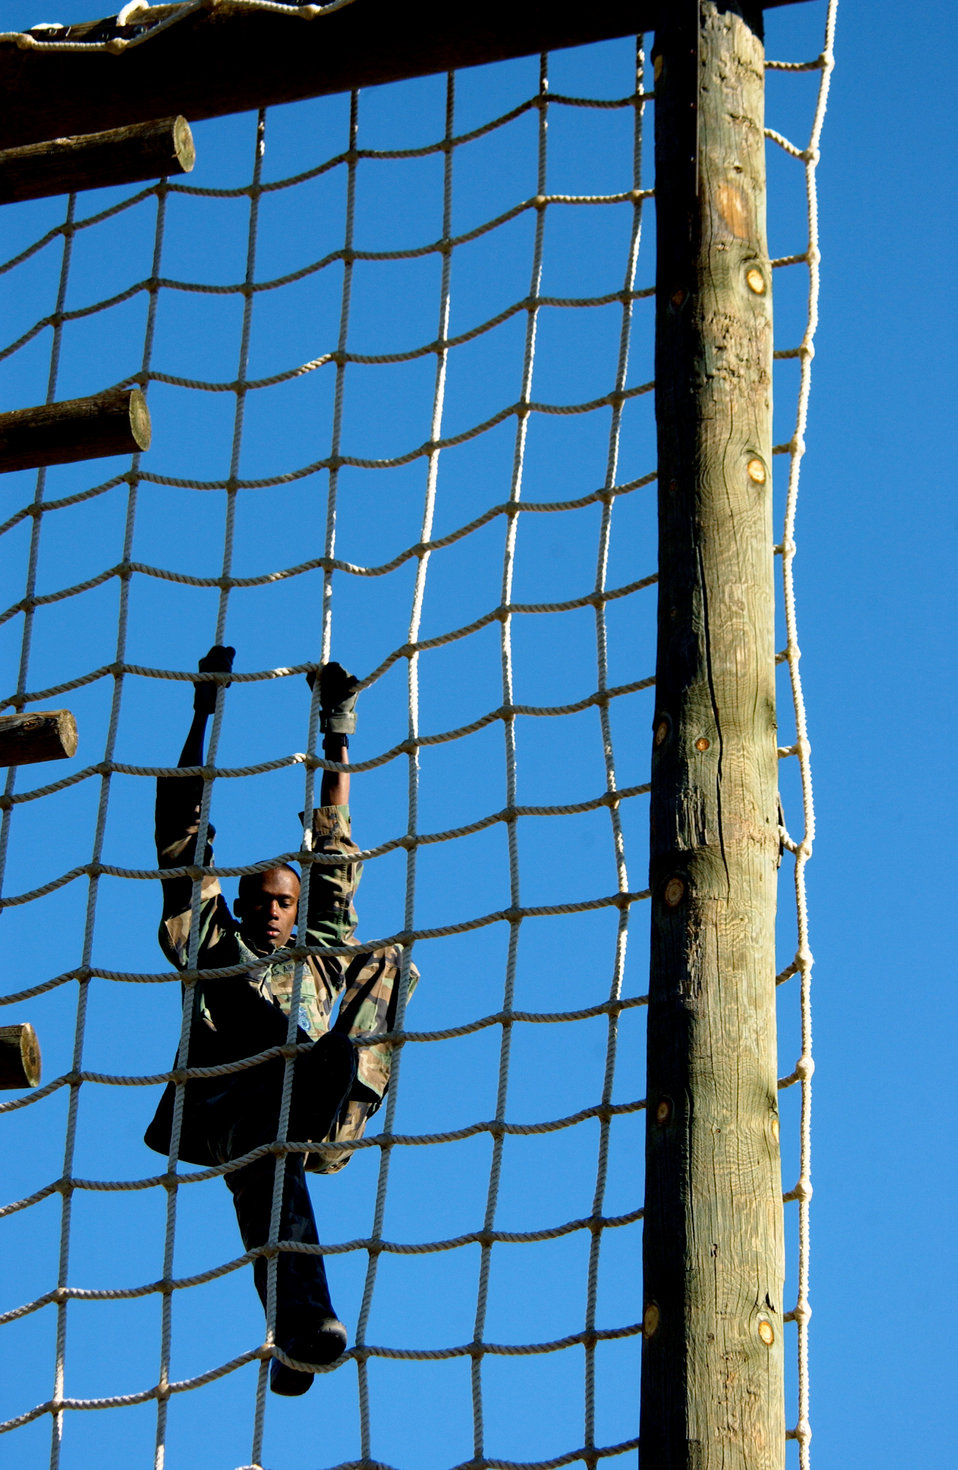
The

FORT HUACHUCA, Ariz. -- Senior Airman Greg Davidson climbs netting on the first training obstacle named